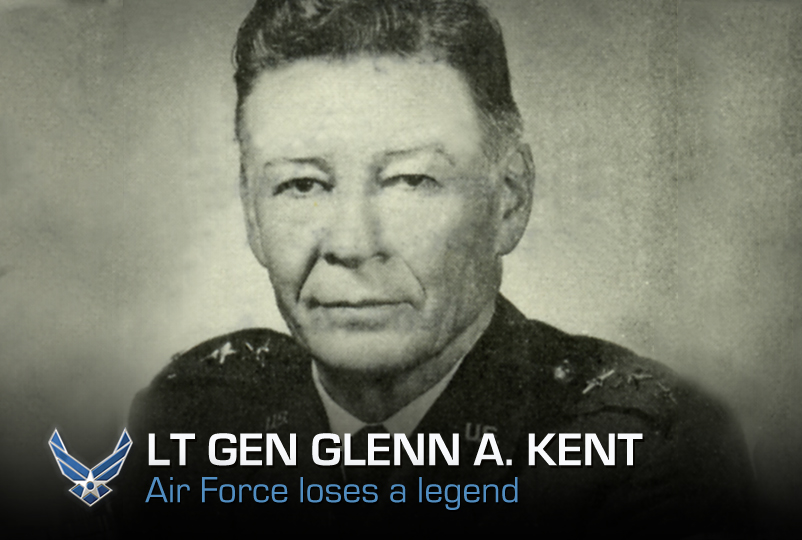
Lt. Gen Glenn A. Kent